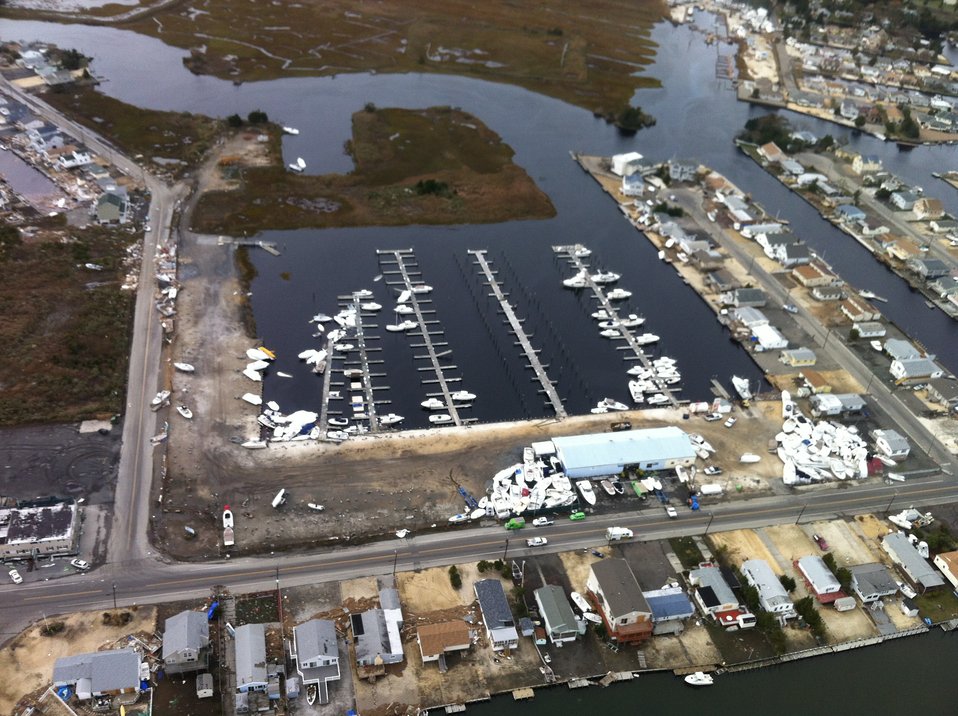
Aerial photo of marina near Edwin B. Forsythe National Wildlife Refuge (NJ)